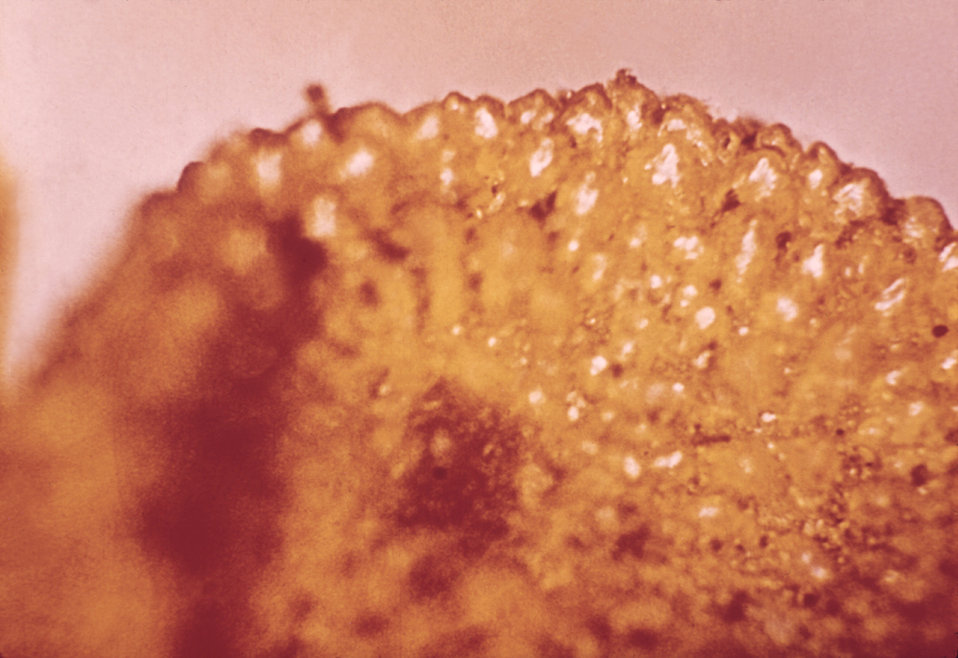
Argasidae family soft ticks possess a leathery integument rather than a tough scutum like the Ixodidae hard ticks.